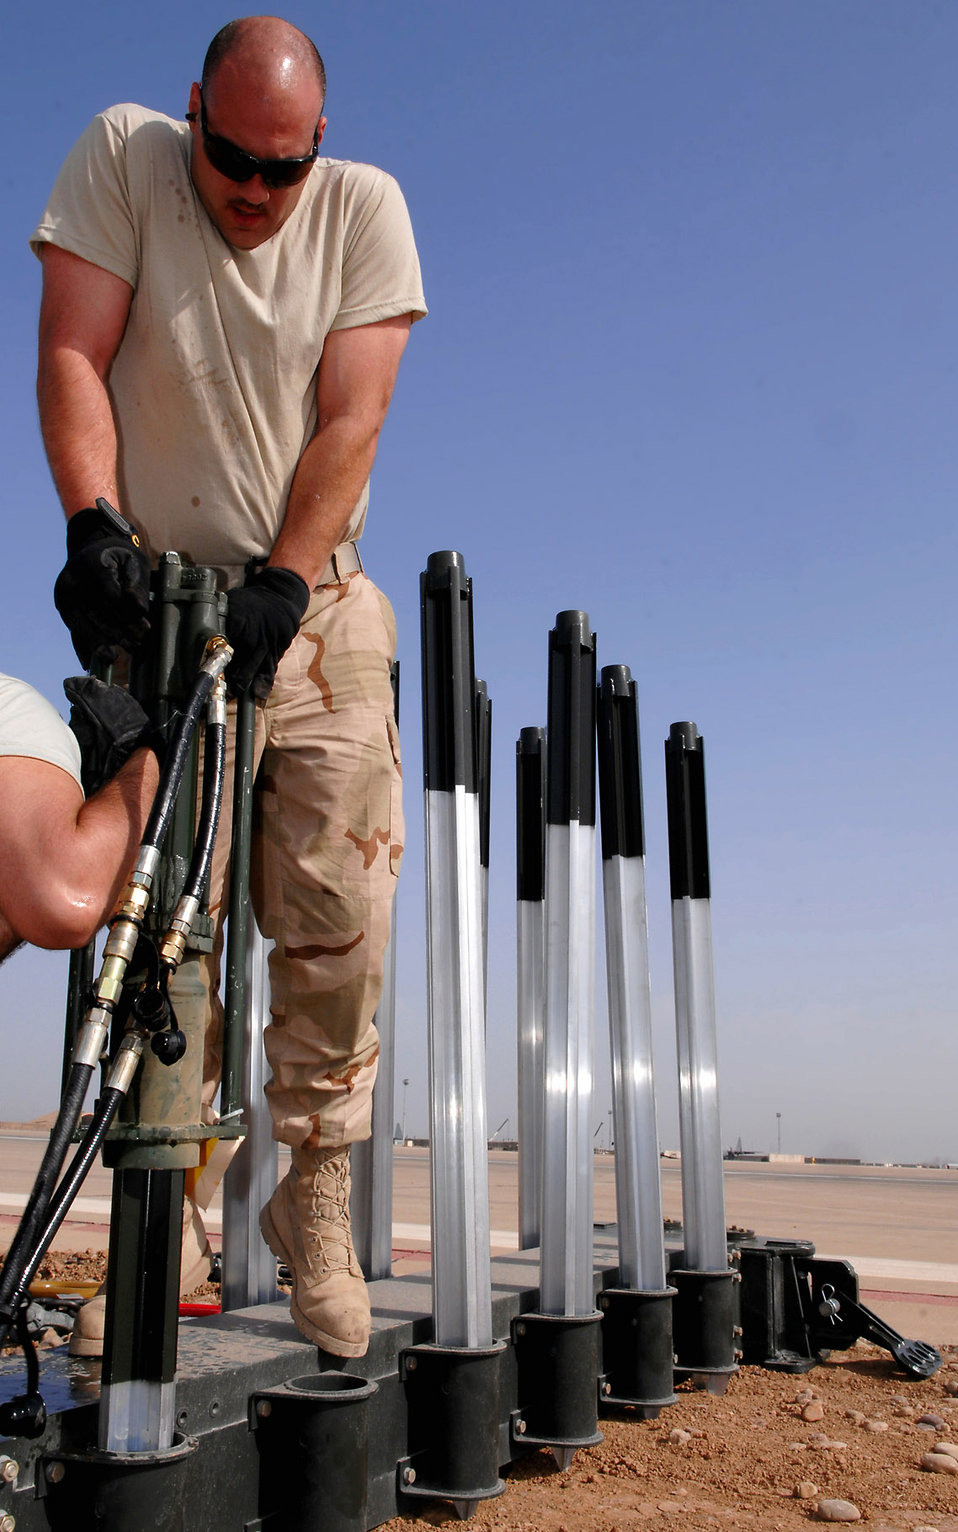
Arresting development

Tech. Sgt. Randy Thibeau holds a stake hammer as it pounds a four-foot stake into the ground March 12 at Balad Air Base, Iraq. The stake prevents the arresting barrier system from shifting during an emergency landing. If a fighter aircraft experiences malfunctioning landing gear, the pilot can a drop a hook to catch a cable attached to the barrier system, which slows the aircraft and enables a smoother landing. Sergeant Thibeau is a 332nd Expeditionary Civil Engineer Squadron power production technician deployed from Ellsworth Air Force Base, S.D.